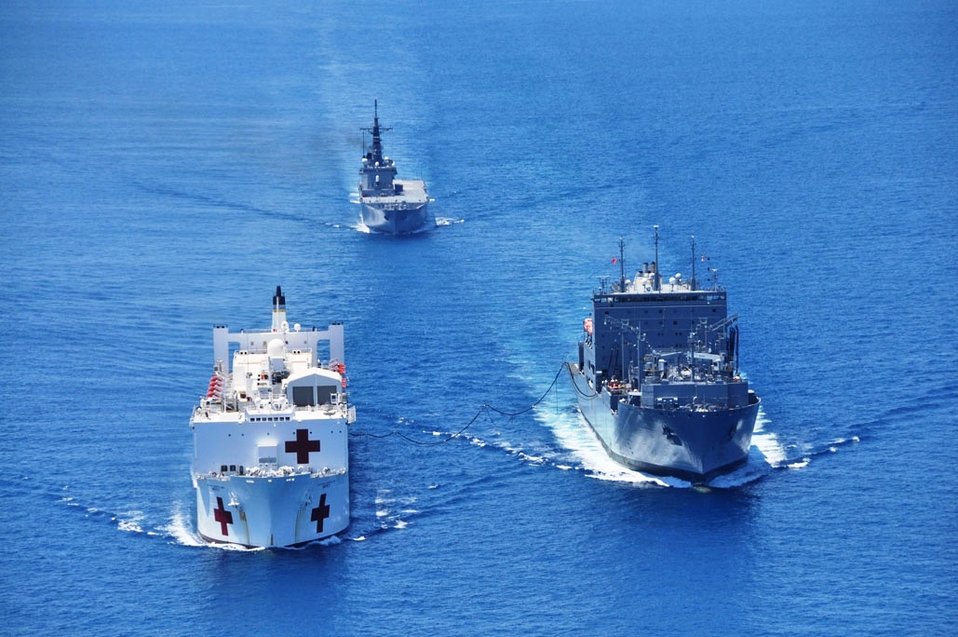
USNS Mercy Is Fueled at Sea By USNS Amelia Earhardt

USNS Mercy is fueled at sea by USNS Emelia Earhardt, with the JDS Kunisaki in the background off the coast of Southeast Asia in the Pacific Ocean on June 14, 2010.